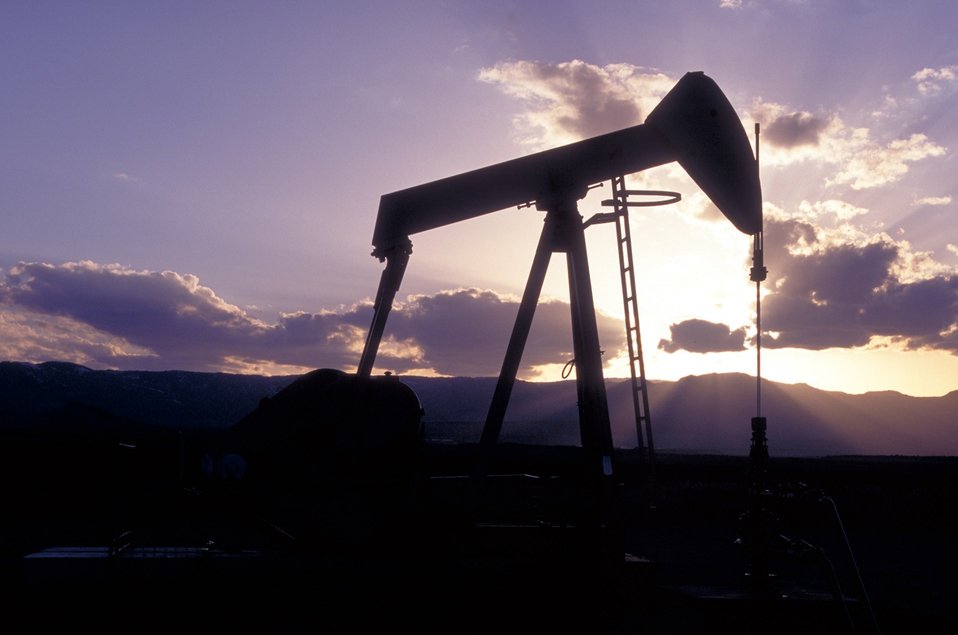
Pump unit producing coal bed methane near Price, Utah.